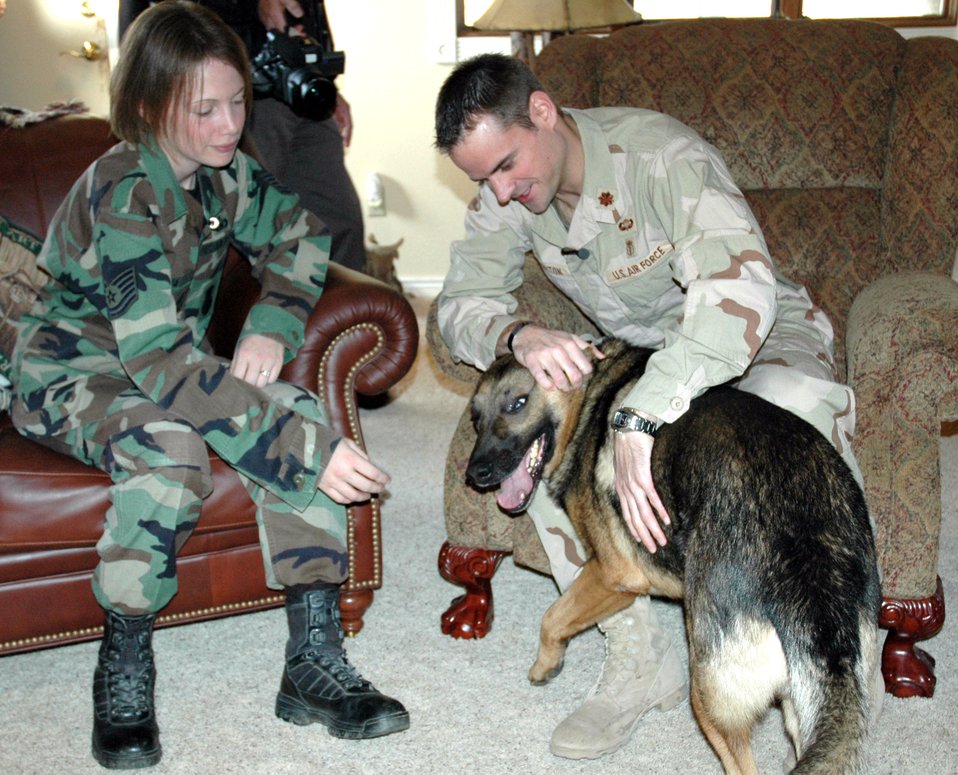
Airman meets doctor who saved her life

MONUMENT, Colo. (AFPN) -- Tech. Sgt. Jamie Dana and her former military working dog, Rex, met Maj. (Dr.) Paul Morton at an animal sanctuary where the sergeant volunteers. Major Morton helped save Sergeant Dana's life after an improvised explosive device detonated under her Humvee near Kirkuk Air Base, Iraq. Major Morton is with the 10th Medical Group at the U.S. Air Force Academy. Sergeant Dana is with the 21st Security Forces Squadron at Peterson Air Force Base, Colo.